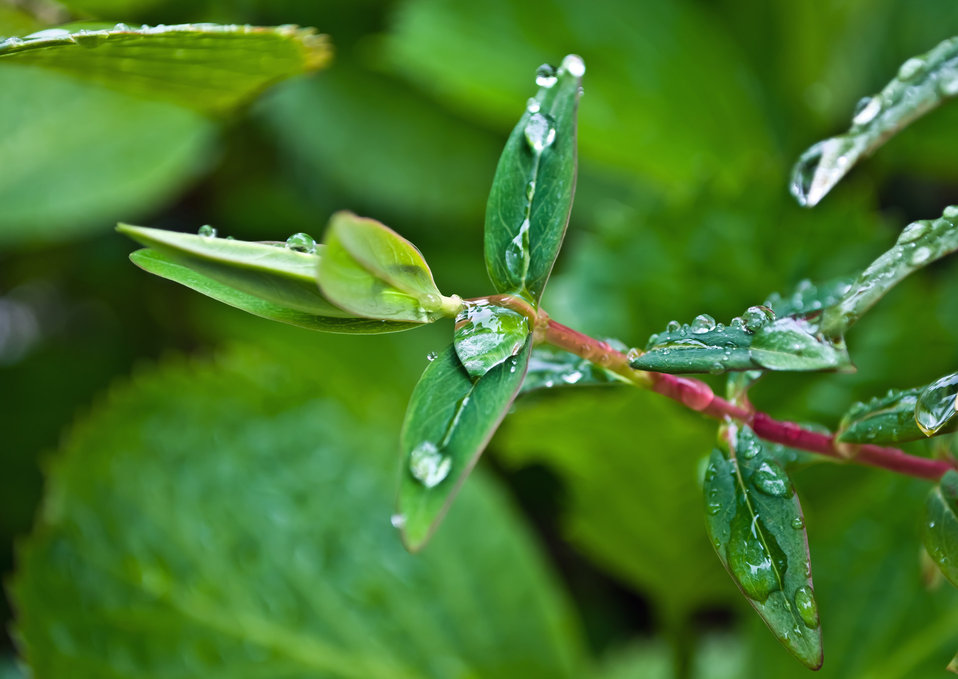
Raindrops on the leaves.